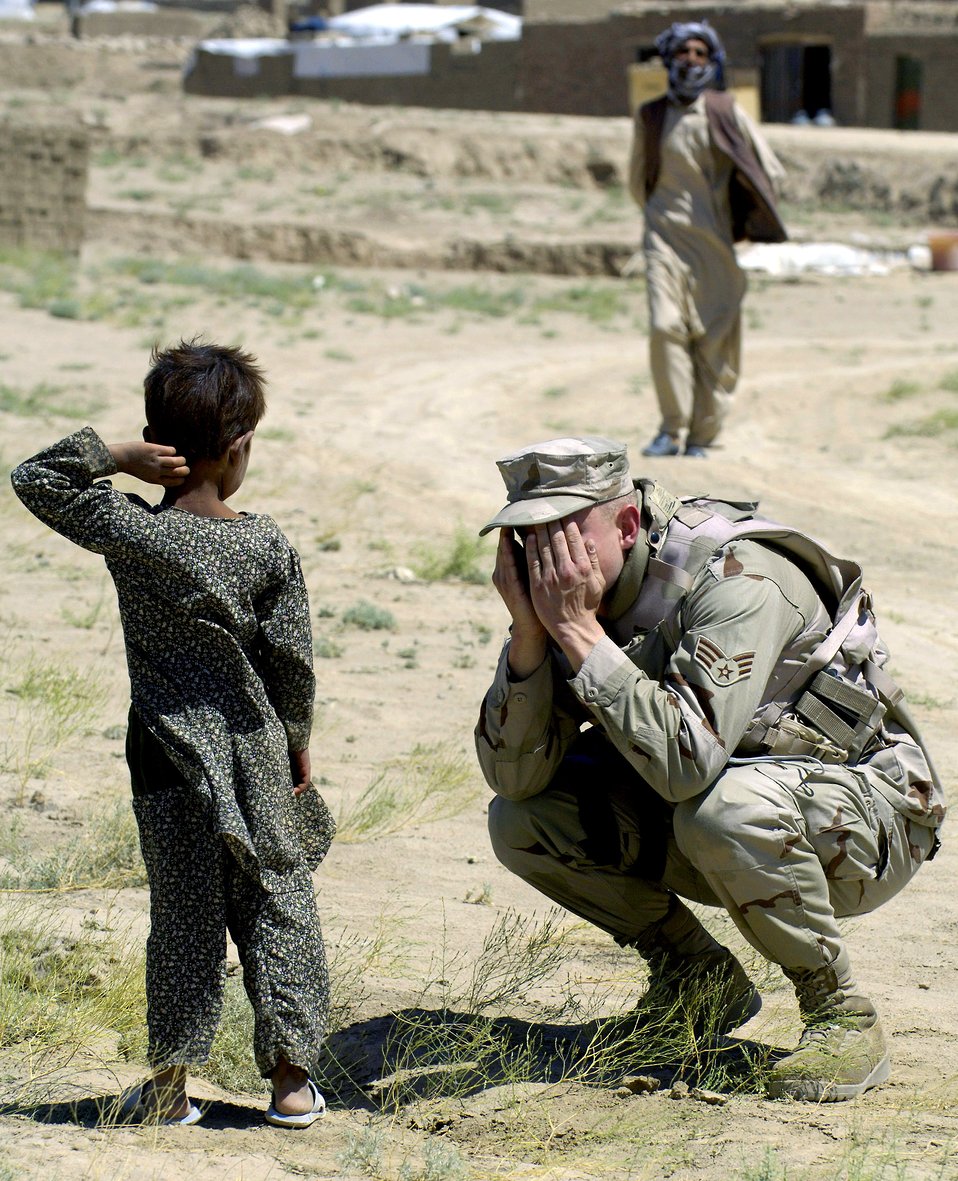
Peek-a-boo

Senior Airman Andrzej Wojcicki plays peek-a-boo with an Afghan child after convoying July 27 to an Internal Displaced Persons camp outside of Kabul, Afghanistan, to deliver donations sent from the United States.